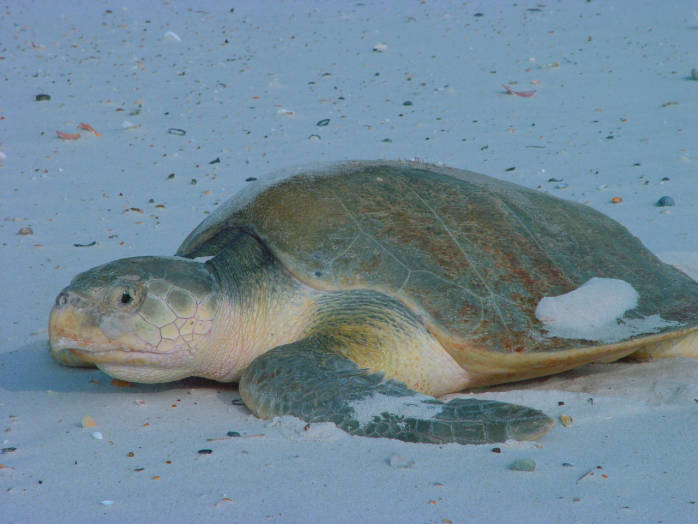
Kemps Ridley sea turtle, Alabama Credit: USFWS